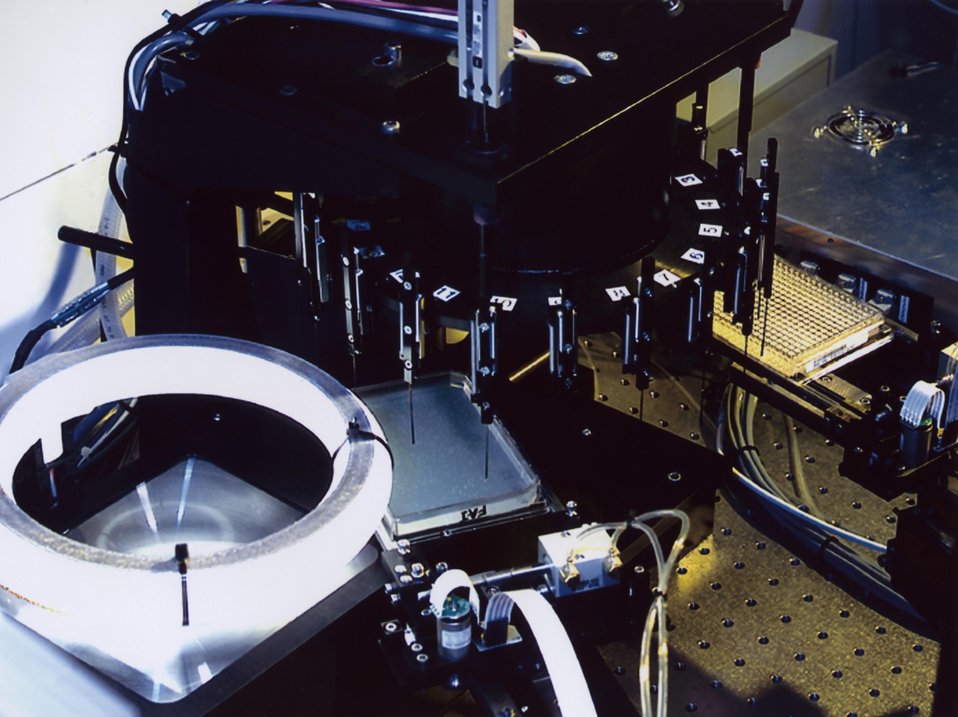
IN ONE OF THE SEQUENCING STEPS, COLONIES OF CELLS CONTAINING HUMAN DNA ARE SELECTED FROM A CELL CULTURE PLATE.
THE JGI, LOCATED NORTH OF LLNL, IS A COLLABORATION OF LLNL, LBNL AND LANL. AT THE PRODUCTION SEQUENCING FACILITY OF THE JGI, EMPLOYEES OF THE THREE INSTITUTIONS ARE WORKING TOGETHER TO SEQUENCE HUMAN CHROMOSOMES 5, 16, AND 19 FOR THE WORLDWIDE HUMAN GENOME PROJECT. SEQUENCING IS THE PROCESS HUNTING GENES. EACH OF OUR 100,000 GENES IS COMPOSED OF THE FOUR BASES, CALLED BASE PAIRS. SCIENTISTS ULTIMATELY WANT TO DECODE THE ENTIRE SEQUENCE OF DNA BASES, IN ORDER TO IMPROVE MEDICINE, HEALTH CARE AND OTHER AREAS OF BIOLOGICAL SCIENCE.